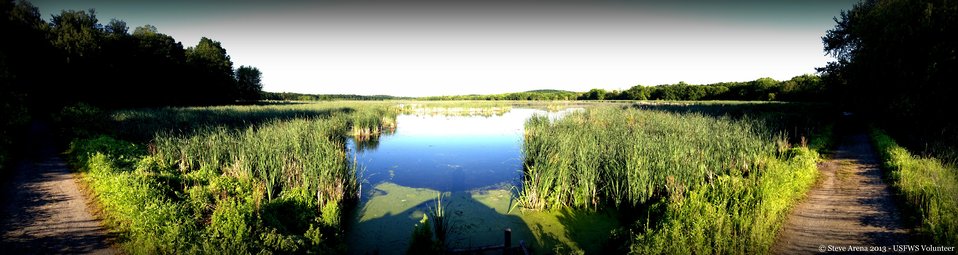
Lower Pool - Great Meadows NWR - a panoramic view

Great Meadows National Wildlife Refuge, Concord, MA

Credit: Steve Arena/USFWS

09 June 2013